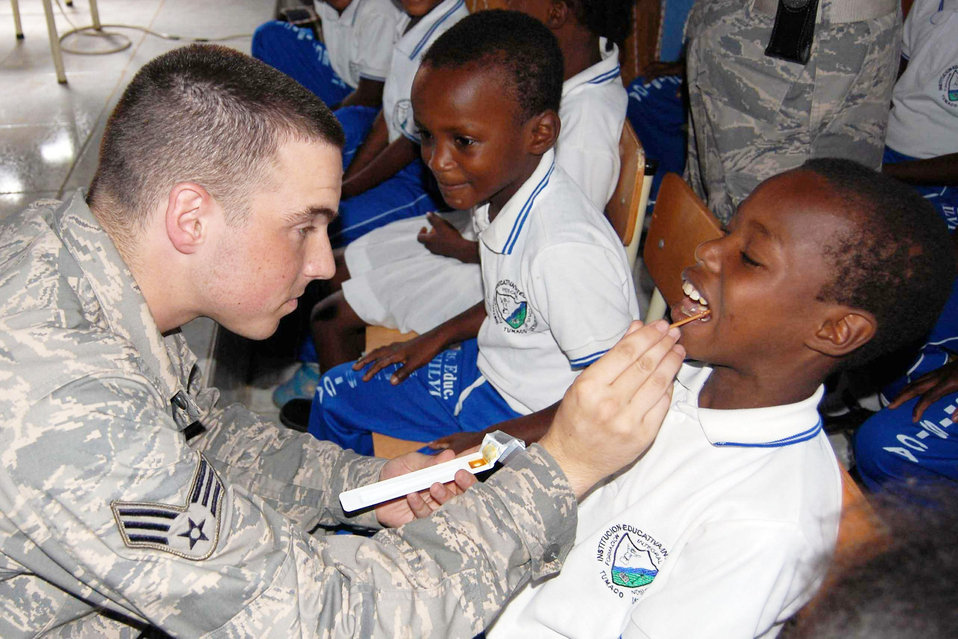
Dental team teaches oral hygiene

Senior Airman Brett Manz, dental technician aboard Military Sealift Command hospital ship USNS Comfort applies fluoride varnish to a student's teeth to make the them stronger and more resistant to cavities here June 15, 2009 in support of Continuing Promise 2009. CP09 is a four month humanitarian and civic assistance mission to seven countries in Latin America and the Caribbean. Comfort is scheduled to be in Colombia until June 17.